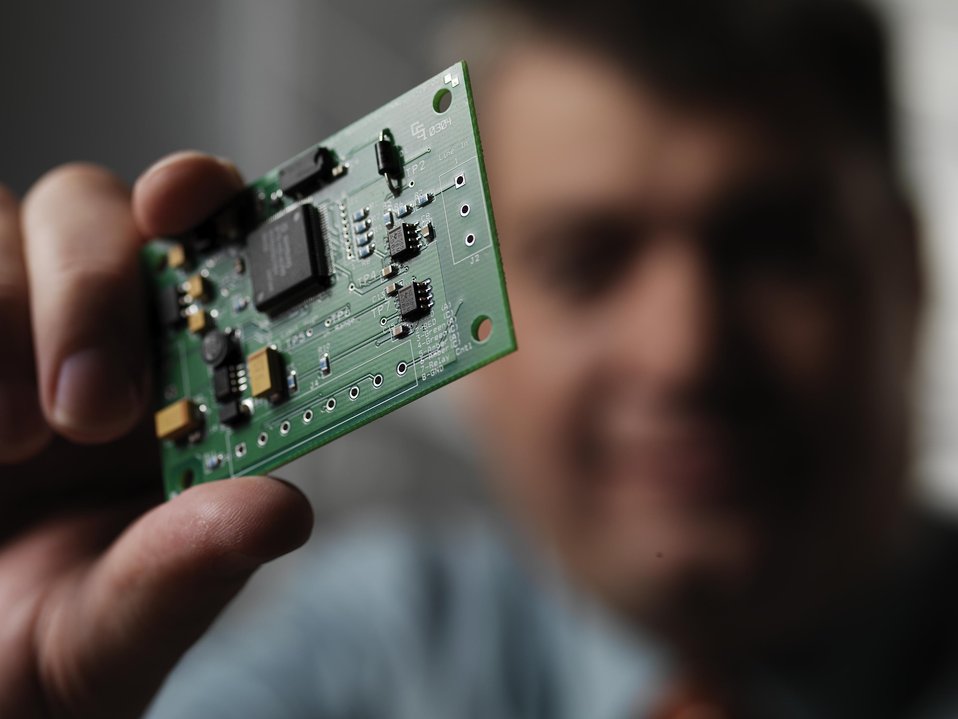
Grid Friendly Appliance Controller, is a playing-card-sized integrated circuit developed by researchers at Pacific Northwest National Laboratory.
The circuit board would turn normal household appliances into ones that would better regulate energy usage and help prevent local and national blackouts. It is a two by two-and-a-half inch circuit board, is at the heart of Grid Friendly appliances. Installed in refrigerators, air conditioners, water heaters and various other household appliances, this device would monitor the power grid and turn appliances off for a few seconds to a few minutes in response to power grid overload. When power plants cannot generate enough power to meet customer's needs, Grid Friendly appliances reduce some of the load on the system to balance supply and demand. Consumers will benefit from avoided blackouts and from lower electric rates since they won't have to pay for unneeded backup power plants. It could help stabilize power grids and prevent outages. By triggering appliances to turn on or off at different times, this device could help control power oscillations that occur in different parts of the grid.